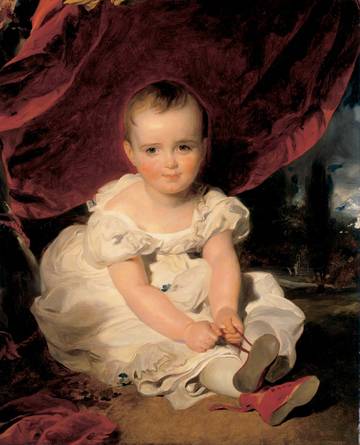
Moritz Michael Daffinger - Archduchess Maria Theresia